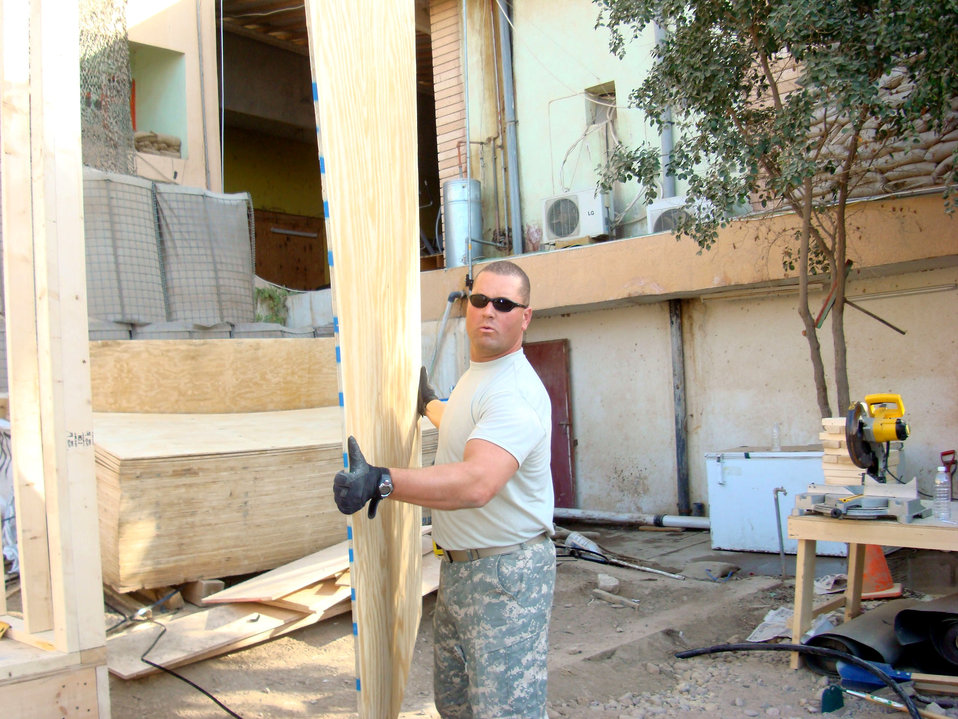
Balad Airmen help improve quality of life for Soldiers in Iraq

Tech. Sgt. Greg Bass carries plywood used to construct a housing unit Jan. 11 at Patrol Base Olson, Iraq. Sergeant Bass, a 732nd Expeditionary Civil Engineer Squadron Det. 6 structural technician, is deployed from Kadena Air Base, Japan.